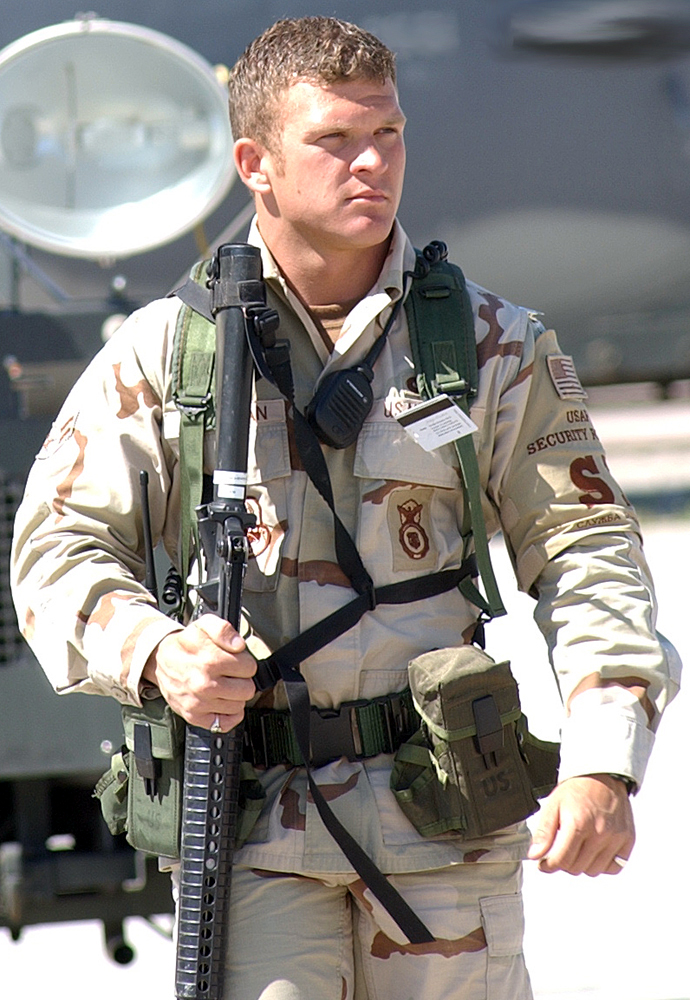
Walkin' the line

SOUTHWEST ASIA -- Airman 1st Class Christopher Weichman walks the flightline at a forward-deployed location. Airman Weichman is a patrolman with the 416th Expeditionary Security Forces Squadron. He is deployed from Fairchild Air Force Base, Wash.